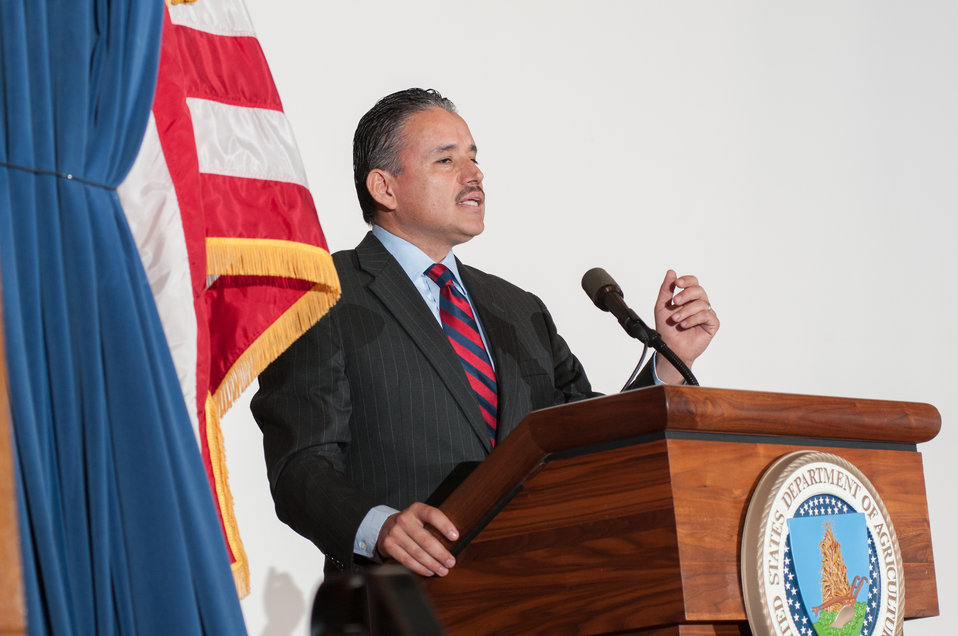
U.S. Department of Agriculture (USDA), Office of the Secretary (OSEC), Deputy Chief of Staff Oscar Gonzales speaks, during the USDA Asian Pacific American Heritage Month Observance, at the USDA headquarters in Washington, D.C., on Thursday, May 23, 2013. This year’s theme is “Building leadership; Embracing the Cultural Values and Inclusions.”